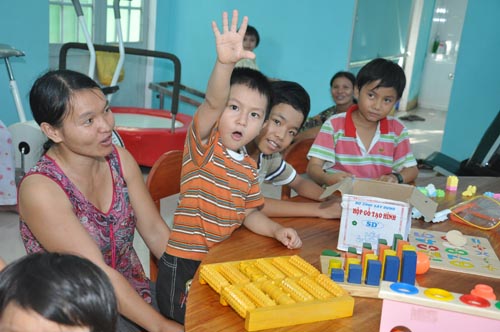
USAID-supported Hao Vang District Health Center, Danang

The once withdrawn Nguyen Quang Trung (center) gives visitors a hearty greeting as they enter a rehabilitation center in Danang.